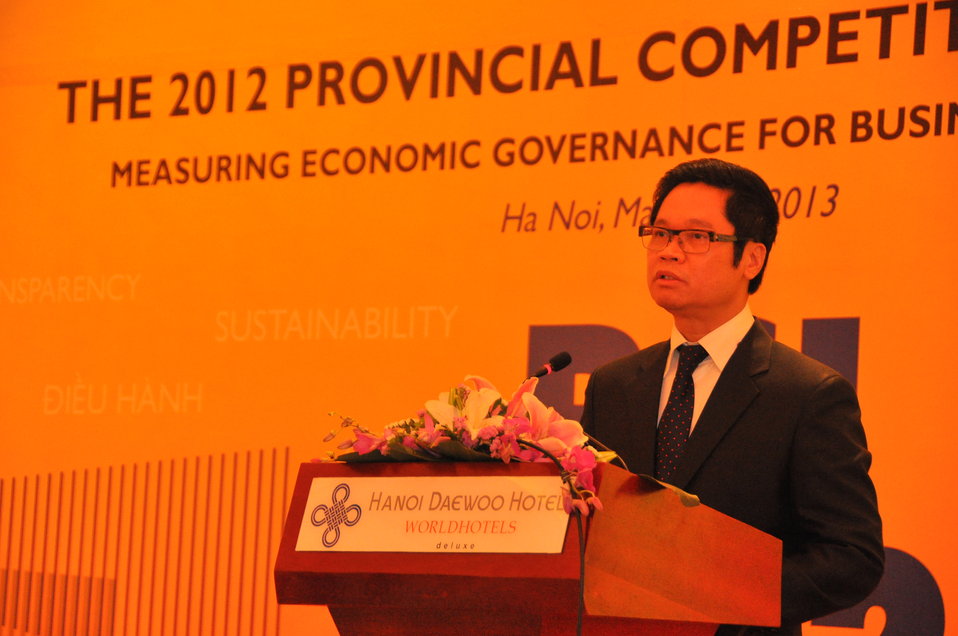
Provincial Competitiveness Index Launch, March 14, 2013

Hanoi, March 13, 2013